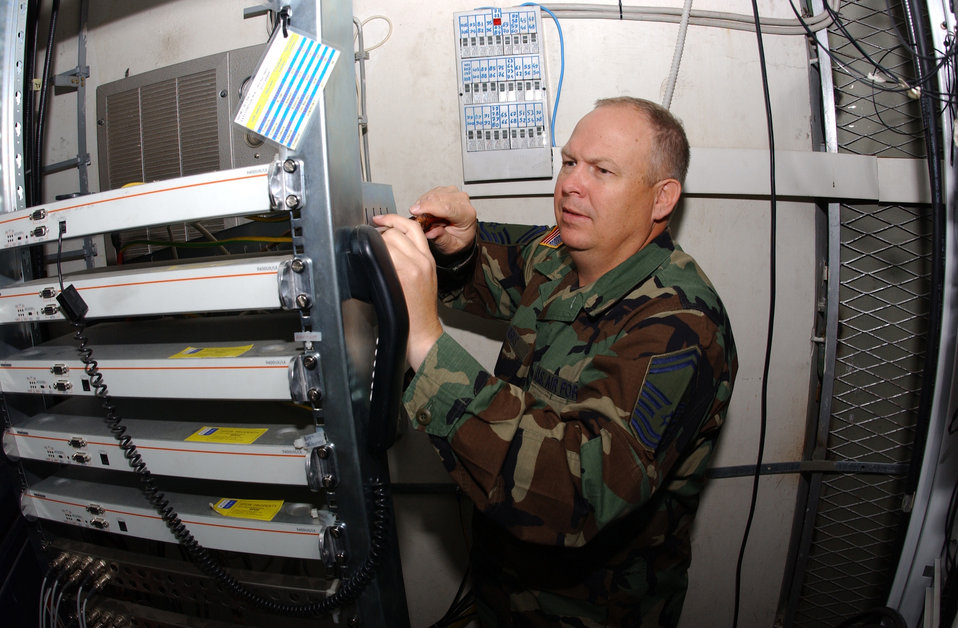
Operation Joint Forge

CAMP BUTMIR, Bosnia-Herzegovina -- Master Sgt. Randy M. Harris, begins the process of removing a digital line of sight unit from a communications tower near here. Sergeant Harris is assigned to the NATO Stabilization Forces.